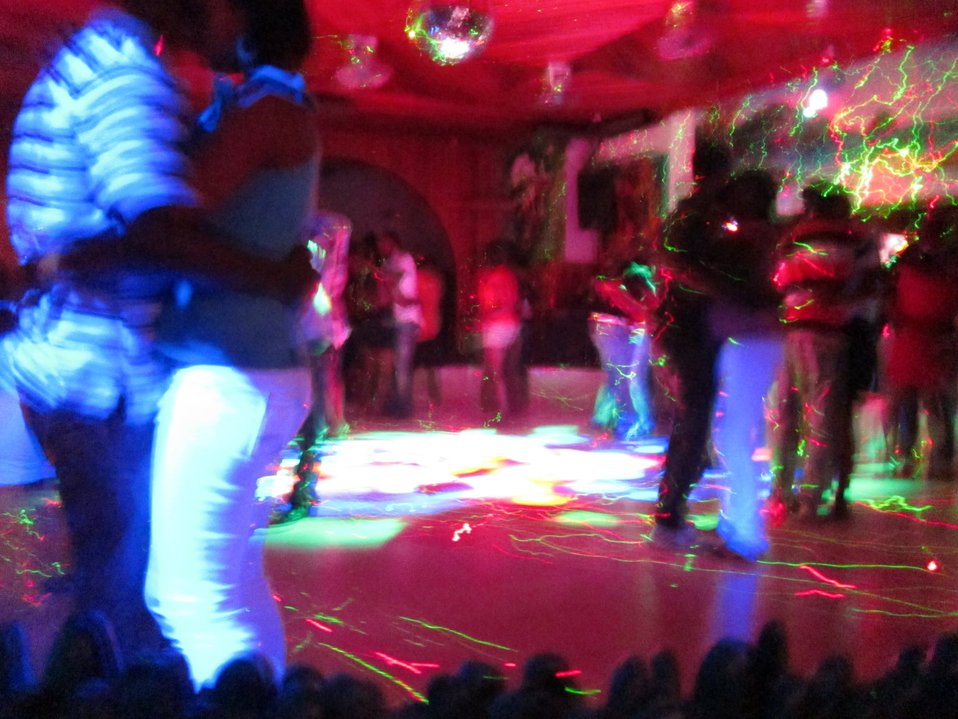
Discotech, Sao Tome